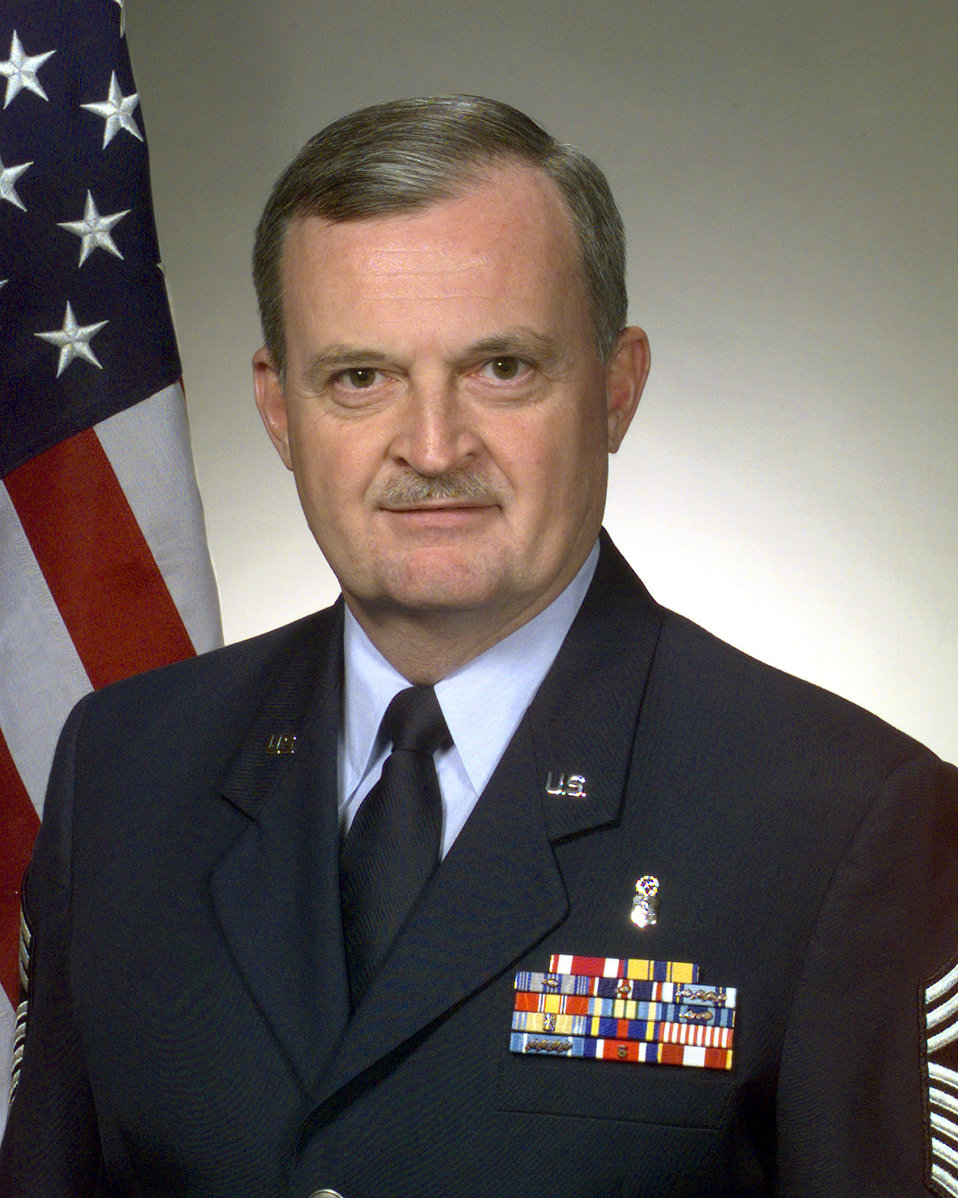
ANG welcomes new command chief

WASHINGTON -- Chief Master Sgt. Richard Smith has been selected for the Air National Guard's top enlisted position.